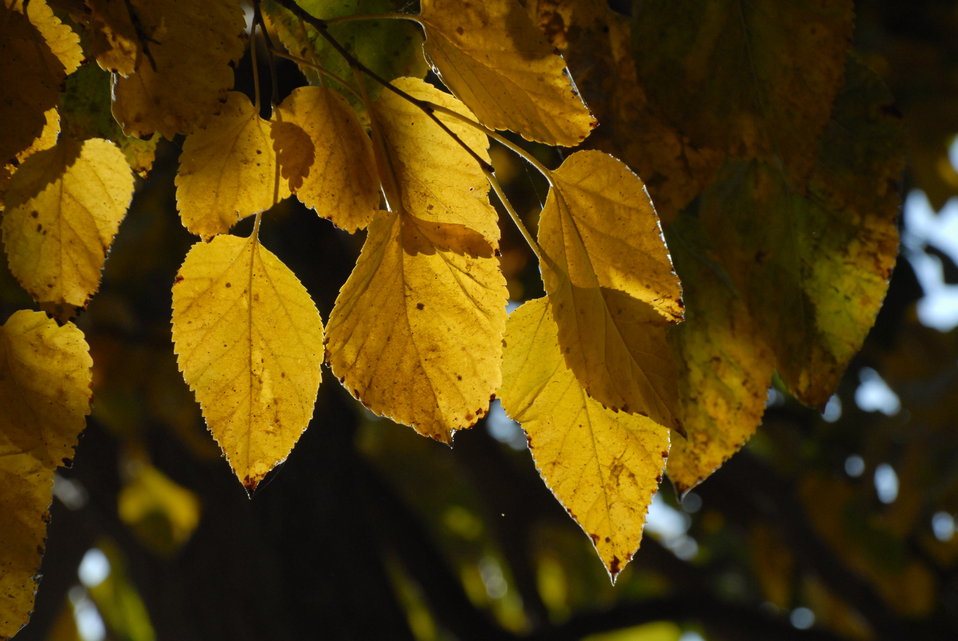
'On the Road' in Balkh Province